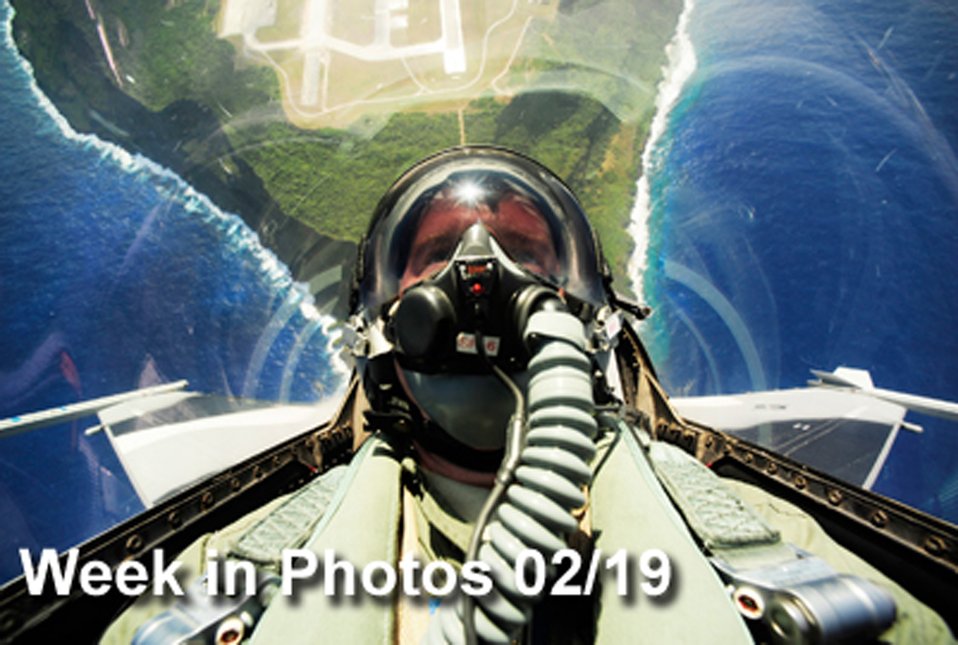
Air Force Week in Photos for Feb. 19, 2010, highlights photos from around the Air Force. In this photo by Staff Sgt. Jacob N. Bailey, an F-16 Fighting Falcon pilot conducts an unrestricted vertical climb from Andersen Air Force Base, Guam, during Exercise Cope North.